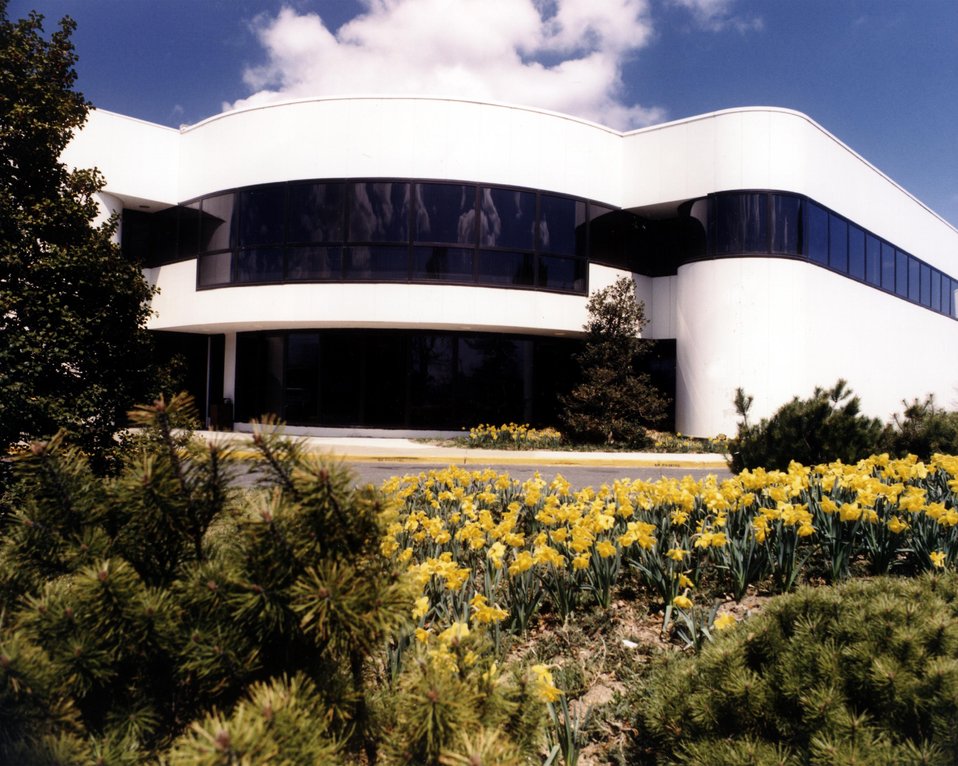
VIEW OF THE NATIONAL SYNCHROTRON LIGHT SOURCE.

THE NATIONAL SYNCHROTRON LIGHT SOURCE IS THE NATION'S LARGEST FACILITY DEDICATED SOLELY TO THE PRODUCTION OF SYNCHROTRON RADIATION. IT PROVIDES INTENSE BEAMS OF X-RAYS AND ULTRAVIOLET LIGHT FOR USE BY SCIENTISTS FROM ALL OVER THE COUNTRY, FOR RESEARCH IN PHYSICS, CHEMISTRY, BIOLOGY AND VARIOUS TECHNOLOGIES. WORK AT THE NSLS INCLUDES BOTH BASIC RESEARCH AND PRACTICAL APPLICATIONS OF USE TO INDUSTRY, USERS OF THE NEW FACILITY INCLUDE VISITING SCIENTISTS FROM UNIVERSITIES, OTHER NATIONAL LABORATORIES, AND CORPORATIONS.